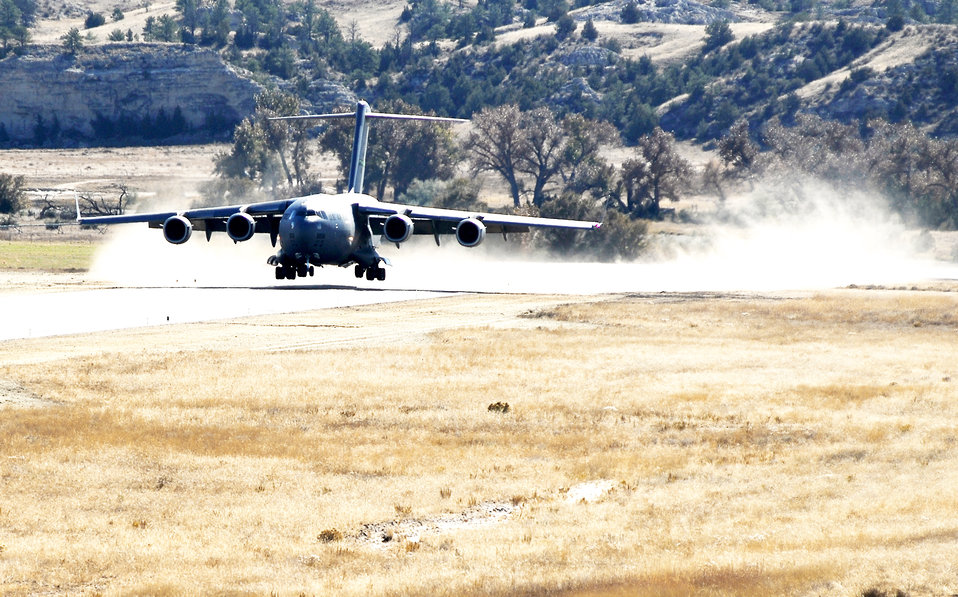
C-17 tests updated airfield

A C-17 Globemaster III from McChord Air Force Base, Wash., lands at the Wyoming National Guard's Guernsey Army Airfield in Guernsey, Wyo., Oct. 17, 2009, during the official opening of the updated airstrip now capable of handling the massive cargo aircraft. The airstrip is now able to park up to 23 fixed-wing aircraft, including three C-17s. In addition to the civilian-military airstrip, Camp Guernsey also boasts nearly 70,000 acres of terrain and supports approximately 65 square miles of restricted air space up to 30,000 feet.